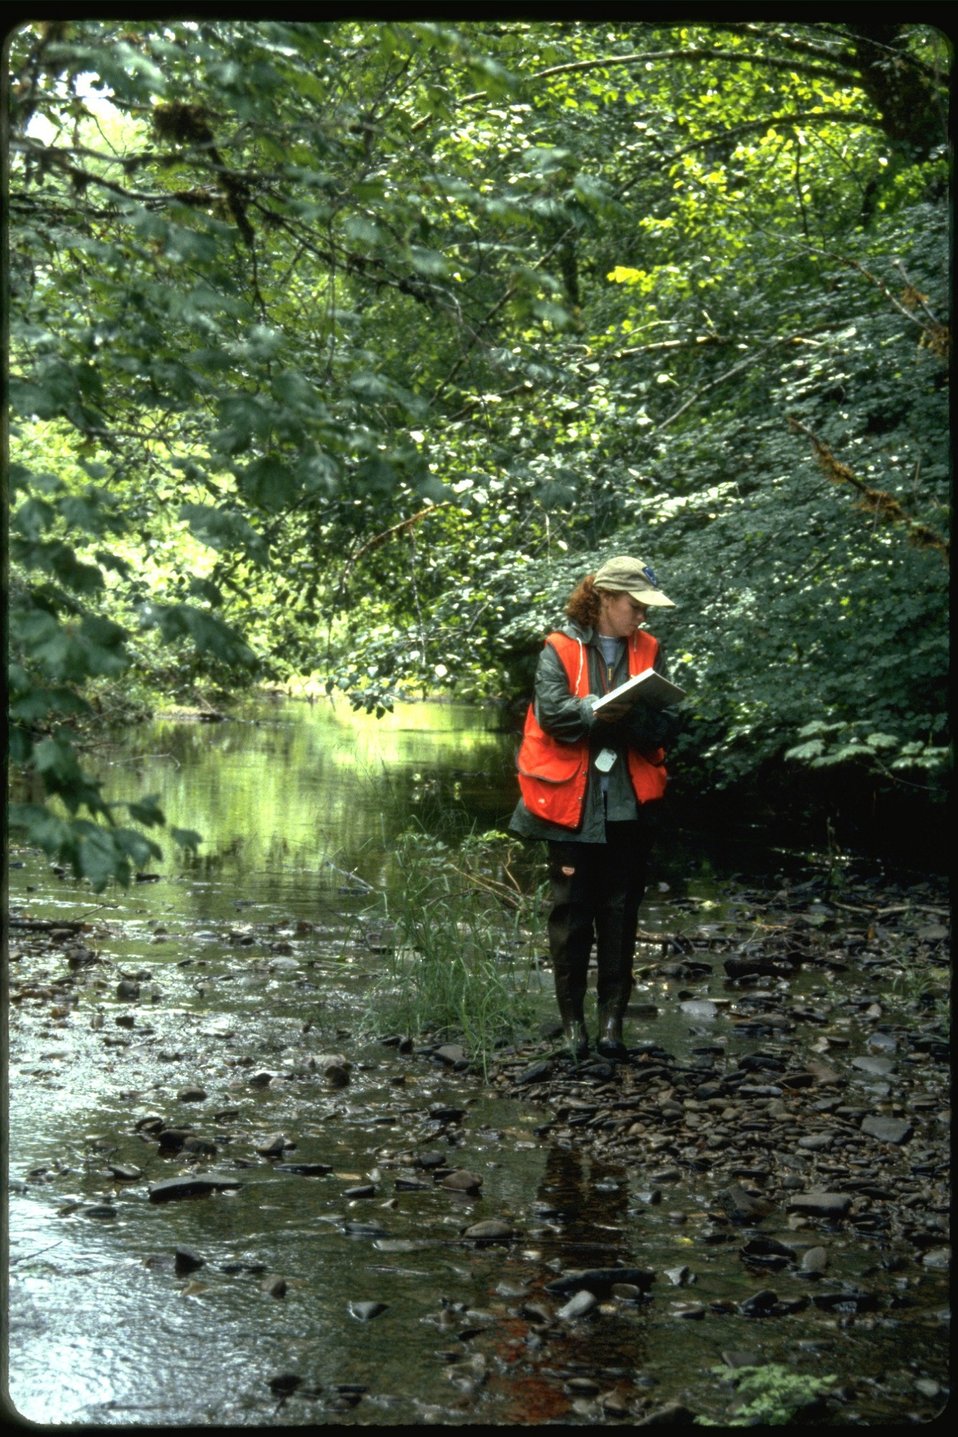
Sarah surveying Smith Creek during habitat study.